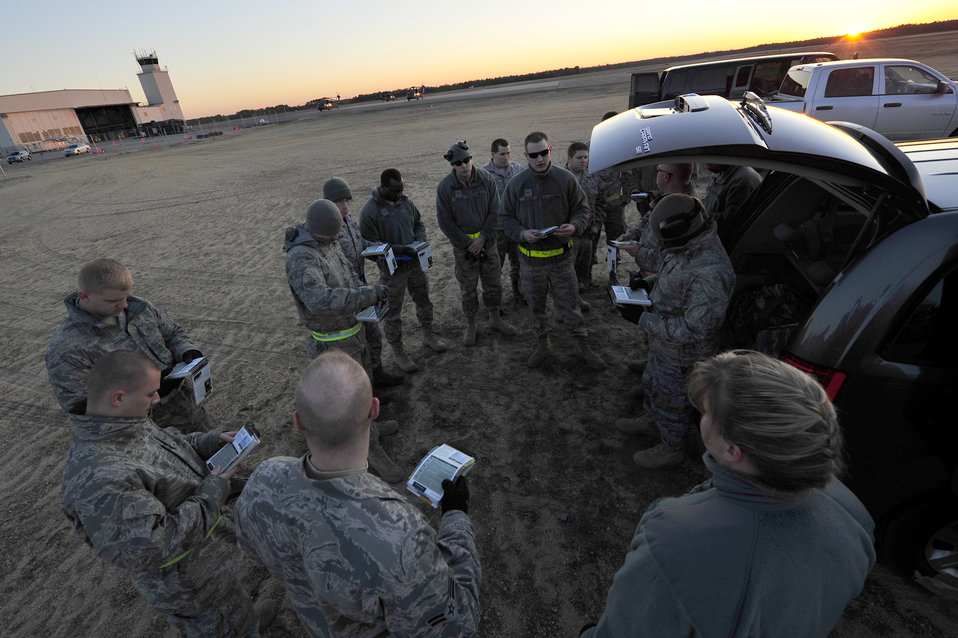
Field training exercise

Mobility Airmen from the 621st Contingency Response Wing discuss medical scenarios during a field training exercise Feb. 23, 2011, at Joint Base McGuire-Dix-Lakehurst, N.J.